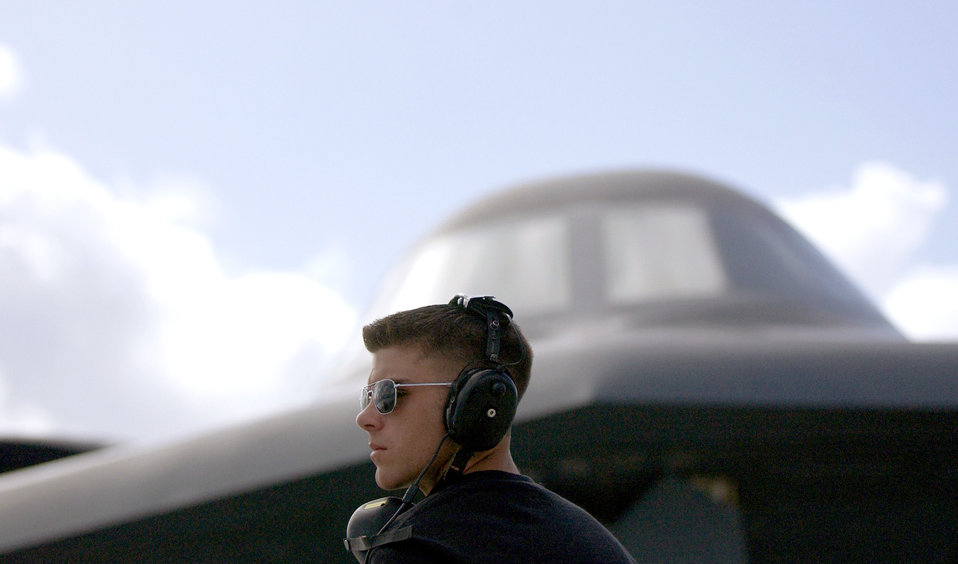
The

ANDERSEN AIR FORCE BASE, Guam -- Airman 1st Class Shane E. White prepares to position a B-2 Spirit stealth bomber on the flightline here. The B-2 Spirits and more than 270 personnel from the 393rd Bomb Squadron are deployed here from the 509th Bomb Wing, Whiteman Air Force Base, Mo., in support of Pacific Command's continuous bomber presence in the Asia-Pacific region, enhancing regional security and the U.S. commitment to the Western Pacific. Airmen White is assigned to the 509th Aircraft Maintenance Squadron at Whiteman AFB.